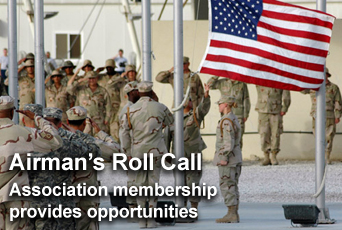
Airman's Roll Call highlights professional associations

This week's Airman's Roll Call focuses on the benefits of membership in professional military associations.